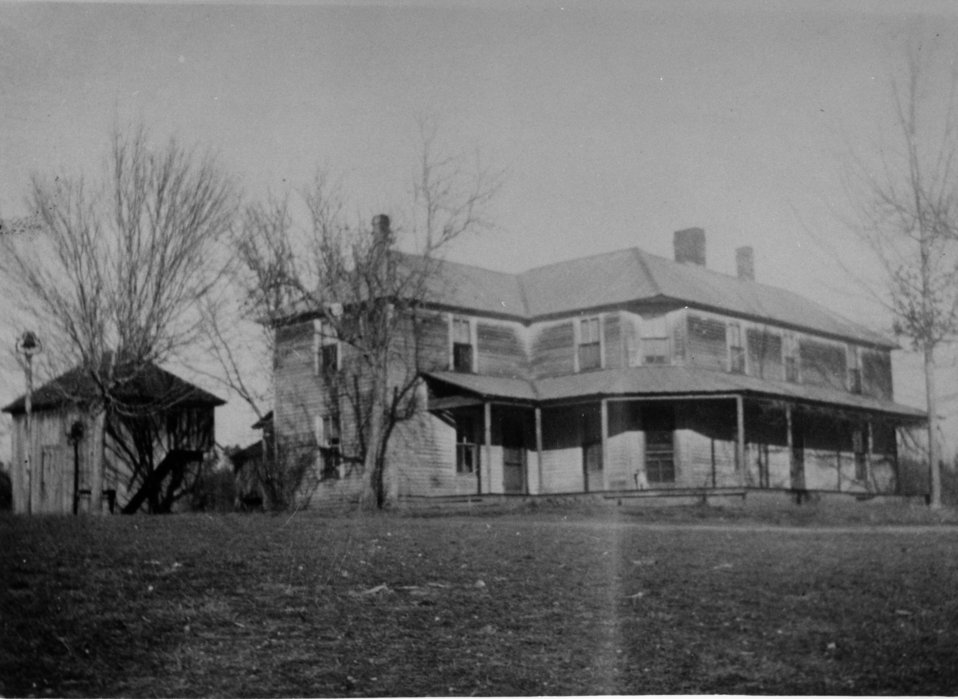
Early settlers at Oak Ridge